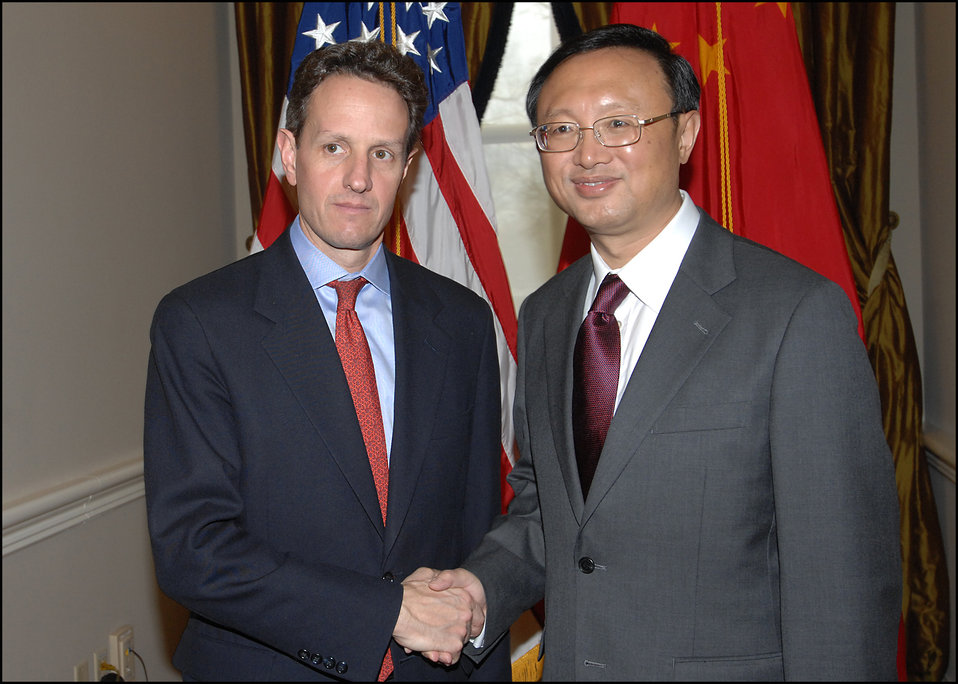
Chinese Foreign Minister Yang Jiechi

Secretary Tim Geithner met on March 11, 2009 with Chinese Foreign Minister Yang Jiechi to discuss the Strategic and Economic Dialogue and issues related to the upcoming G-20 Ministerial meeting.